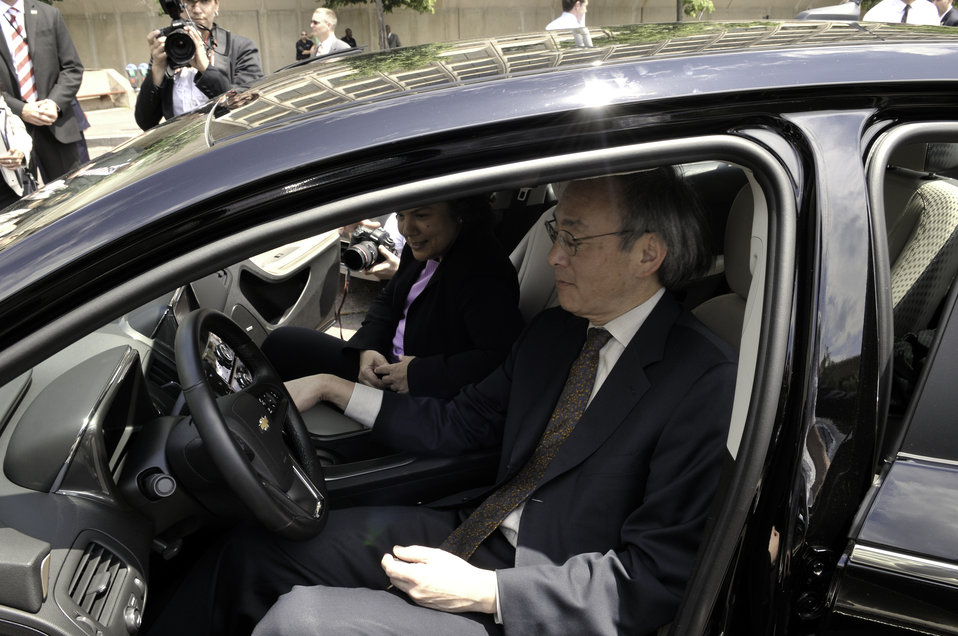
Clean Fleets Announcement 12 of 14

Sec. Steven Chu, US Department of Energy, and Nancy Sutley, White House Council on Environmental Council Chairwoman, try out a new Chevy Volt purchased by the Department of Energy.